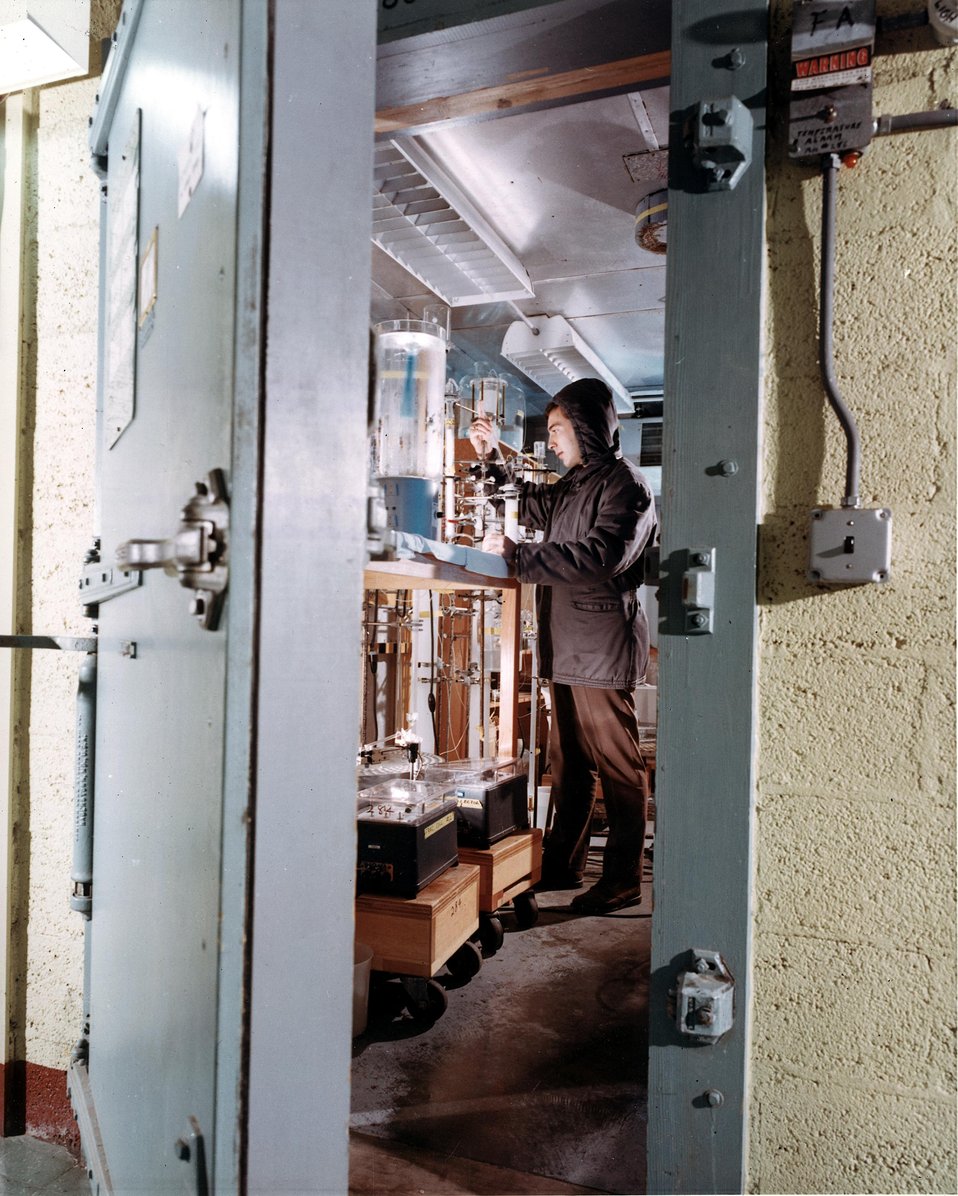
Chromatographic separation of heat sensitive digestive enzymes from pancreatic juices. c. 1966